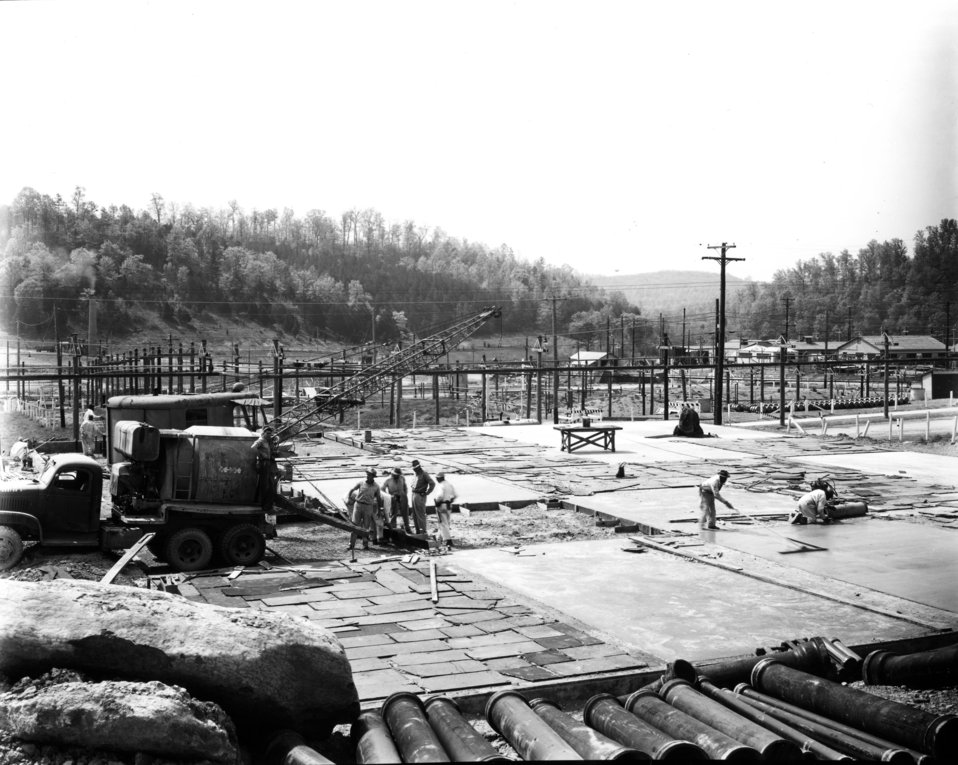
X-10 at Oak Ridge